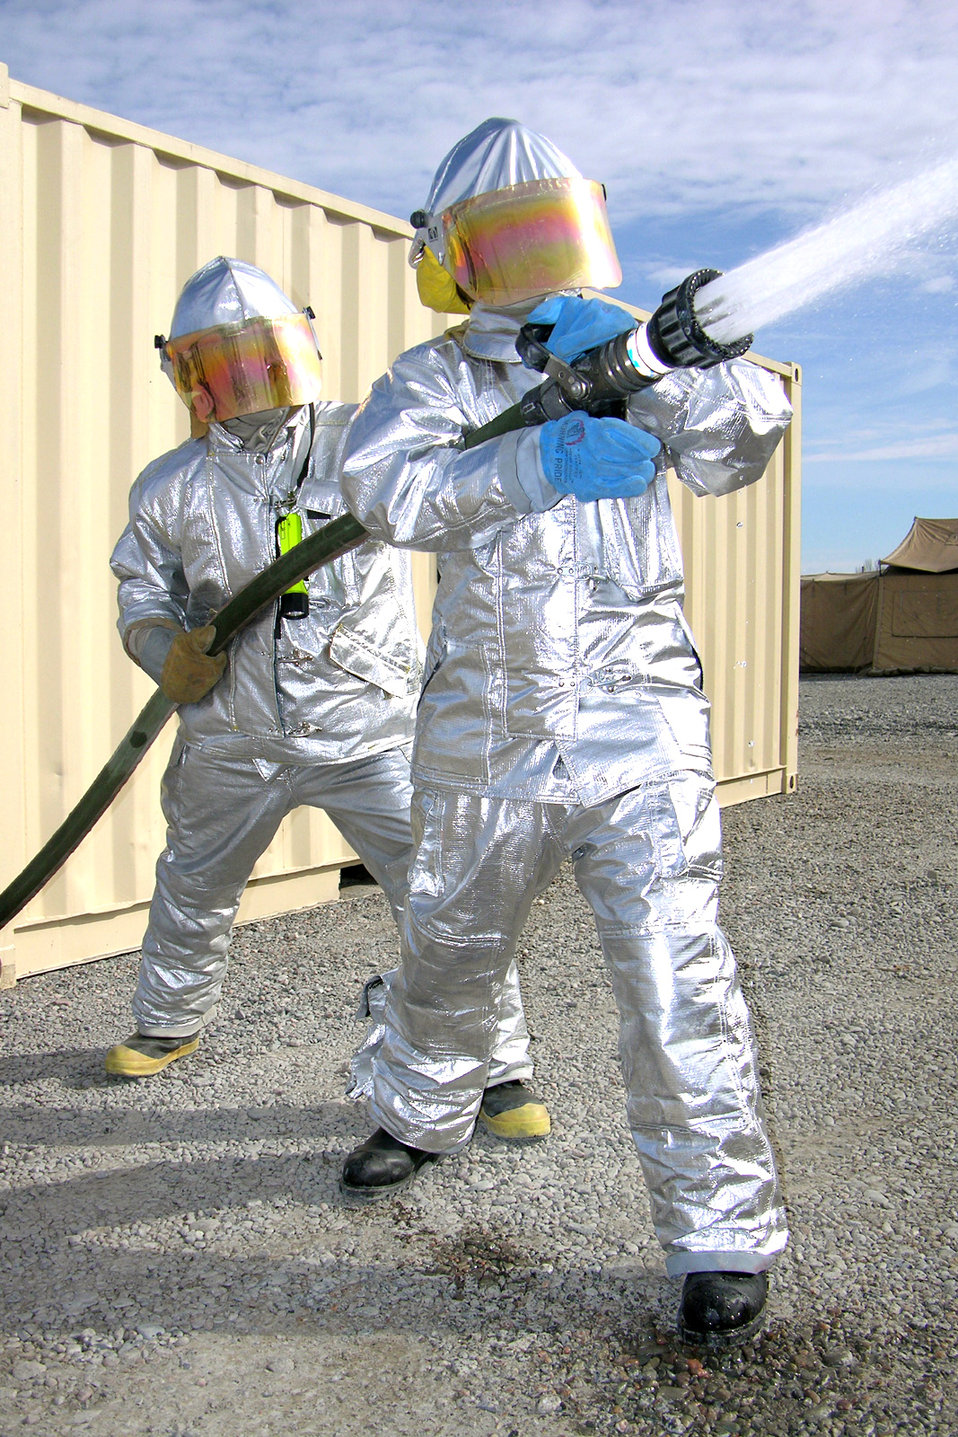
Working under pressure

MANAS AIR BASE, Kyrgyzstan -- Tech. Sgt. Aaron Allen (left) and Airman 1st Class Nicole Cherry practice a handline operation where firefighters enter a facility to perform an offensive operation. An offensive operation is used when there is an attempt to rescue people, which is done by a rescue crew while keeping the fire from spreading to uninvolved areas of the facility. The handline can spray as much as 350 gallons of water per minute.